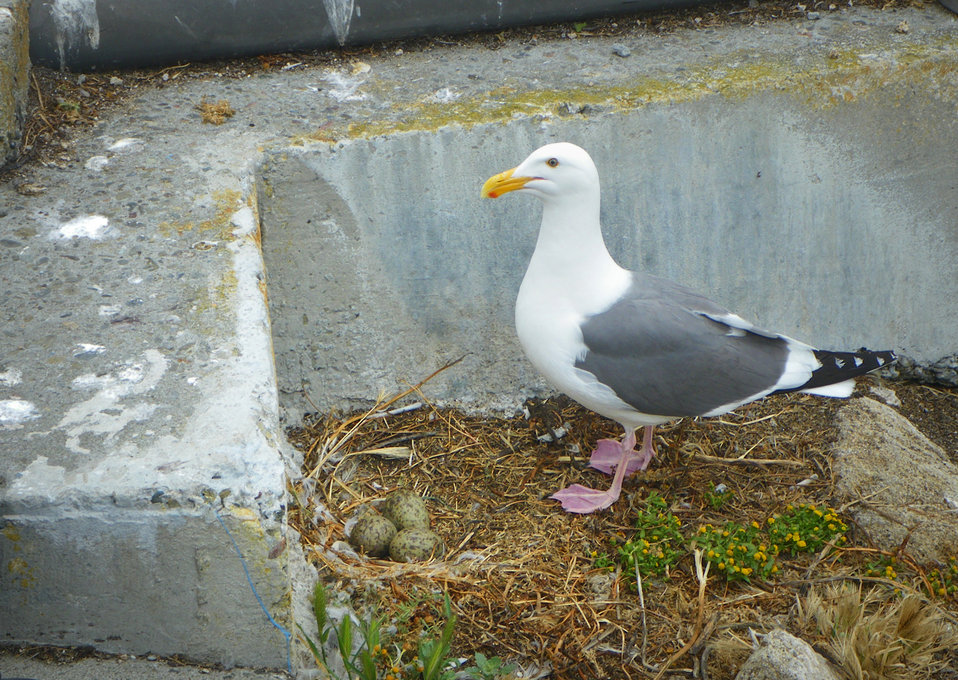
Western Gull with 3 eggs